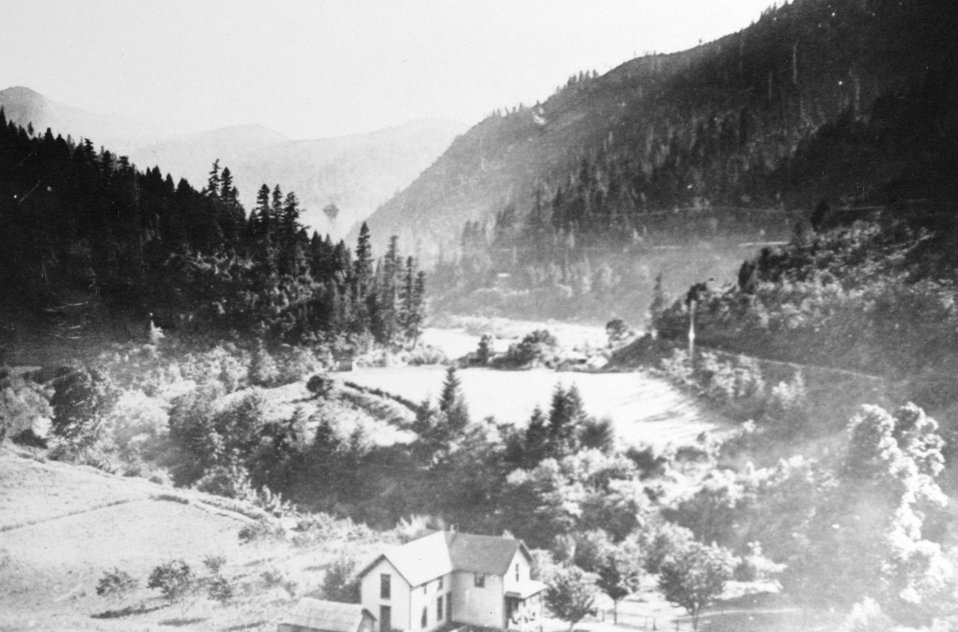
George Billings Ranch at Mule Creek. C. 1915